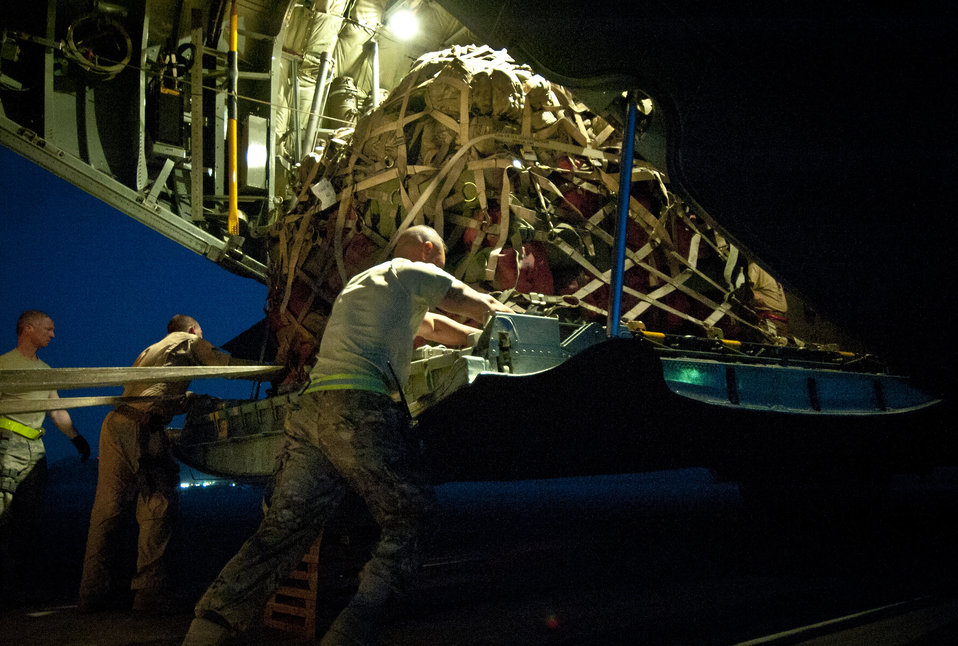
Hercules: A day in the life

Airmen with the 455th Air Expeditionary Wing load cargo in the back of a C-130H Hercules at Bagram Airfield, Afghanistan, June 2, 2012. The C-130H is capable of performing day and night tactical airlift operations.